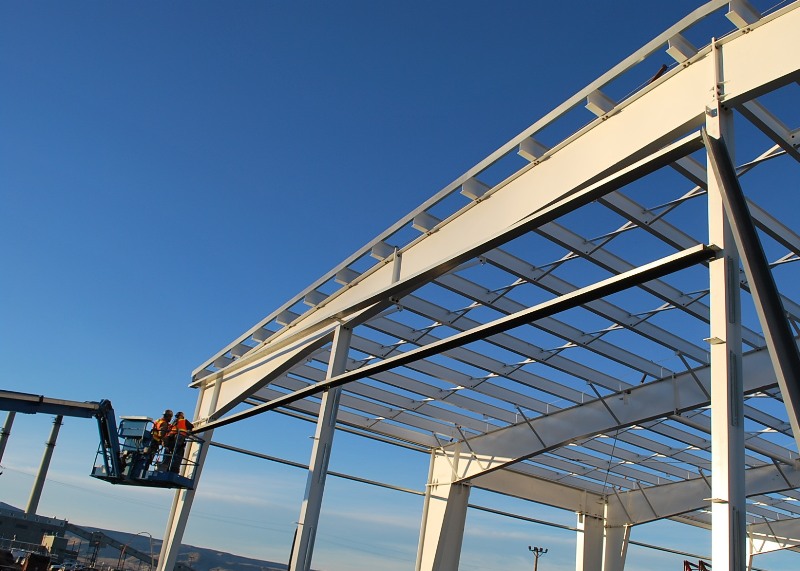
200 West Groundwater Treatment Facility

Construction of the 200 West Groundwater Treatment Facility is on track to be completed by September 2011.